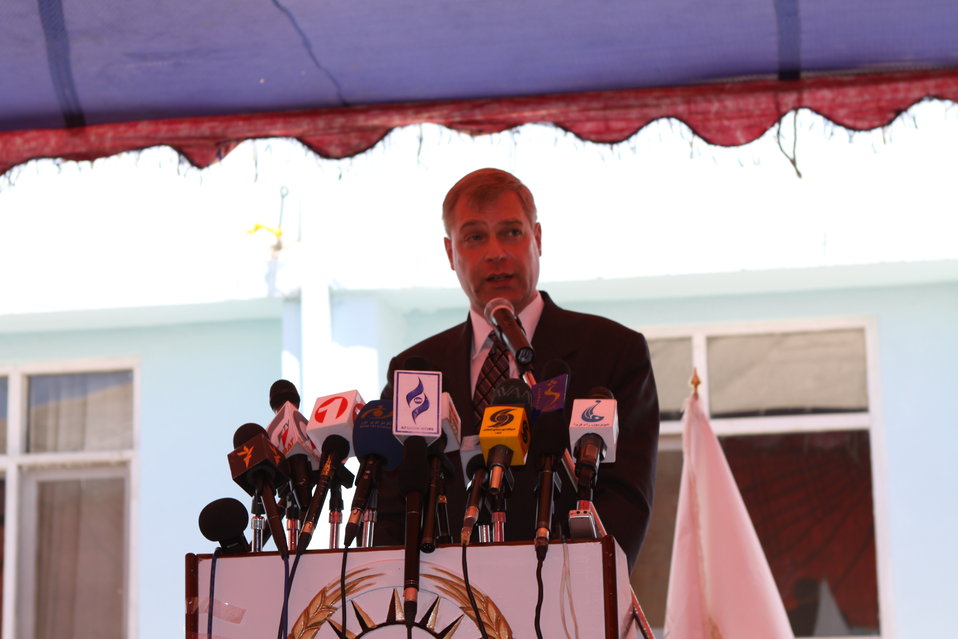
100522 ATVI Graduation 107